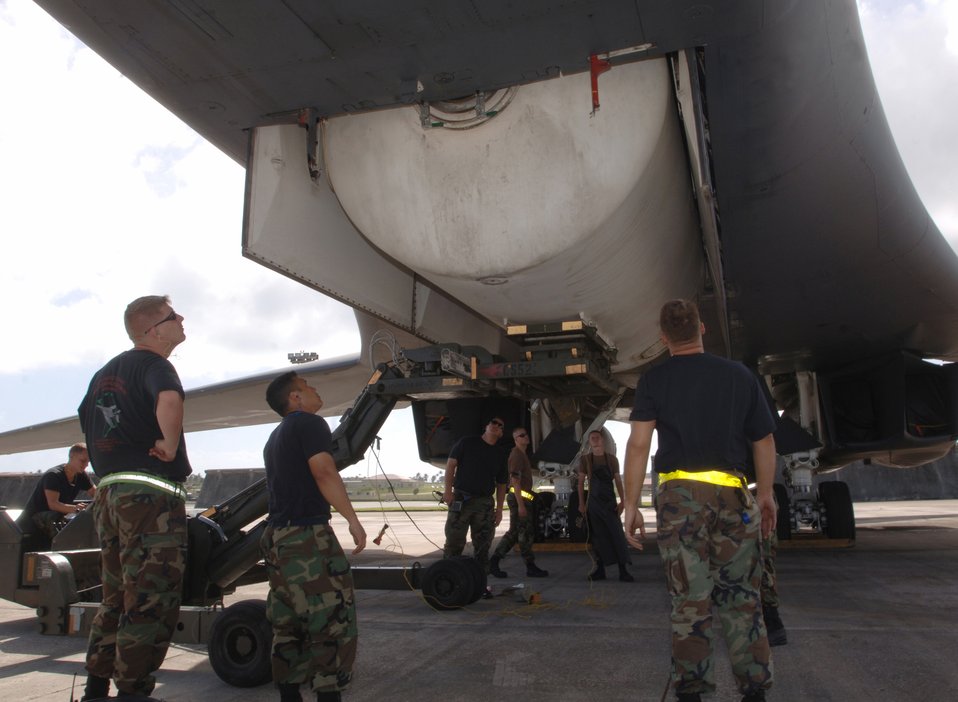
Lancer maintenance

ANDERSEN AIR FORCE BASE, Guam (AFPN) -- Mechanics lower the weapons bay fuel tank of a B-1B Lancer during an inspection here. The Airmen, members of the 28th Aircraft Maintenance Squadron at Ellsworth Air Force Base, S.D., are here for an air and space expeditionary deployment.